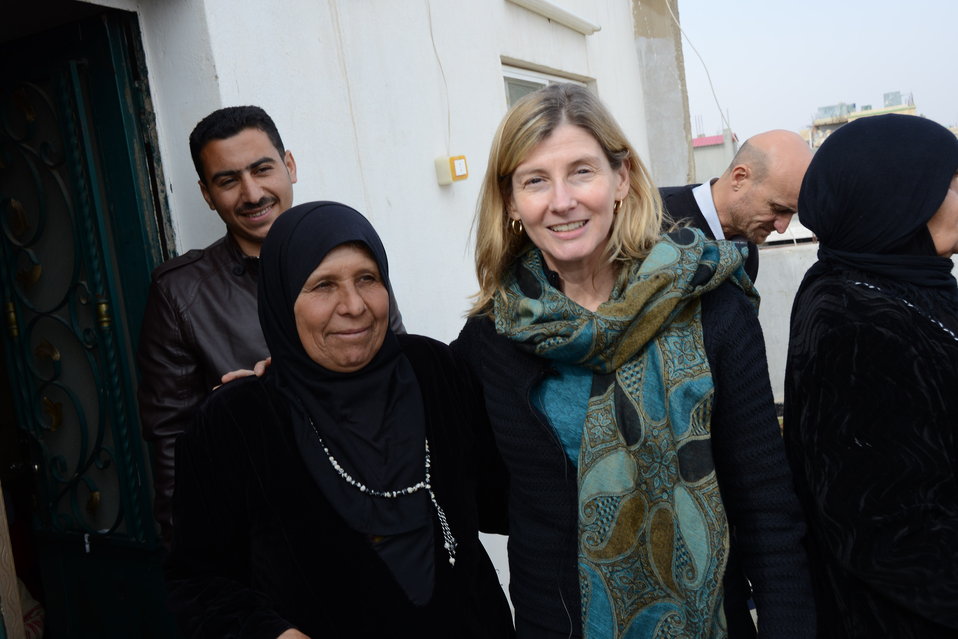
USAID Assistant Administrator Lindborg Interacts With a Syrian Refugee

USAID Assistant Administrator for Democracy, Conflict, and Humanitarian Assistance Nancy Lindborg interacts with a Syrian refugee in Jordan on January 28, 2013.